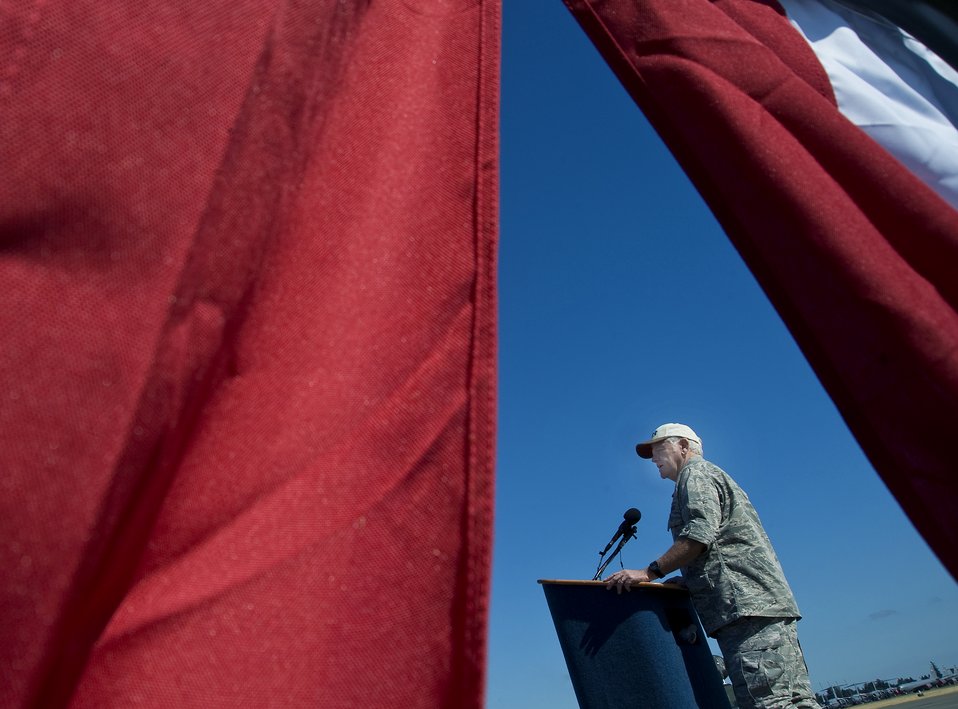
Air Mobility Rodeo begins at McChord

Gen. Arthur J. Lichte speaks to Airmen from around the world participating in the Air Mobility Rodeo 2009 during the opening ceremony July 19 at McChord Air Force Base, Wash. General Lichte is the commander of the Air Mobility Command from Scott AFB, Ill.